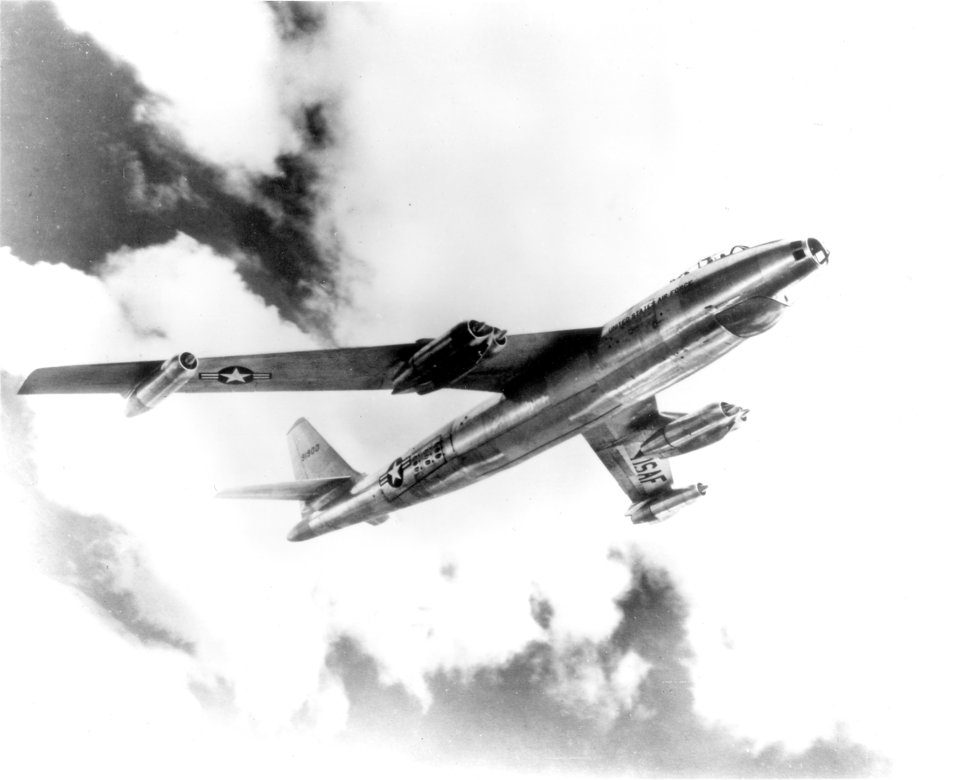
Boeing B-47A

1950's -- A production model B-47A Stratojet, the fastest known bomber in the world, flies near the Boeing Aircraft Co. production plant in Wichita, Kan., Aug. 11. 1950. The swept-wing bomber has a top speed of more than 600 miles an hour. It is powered by six General Electric J-47 turbo-jet engines, has a maximum gross takeoff weight of more than 186,000 pounds and can carry more than 20,000 pounds of bombs.